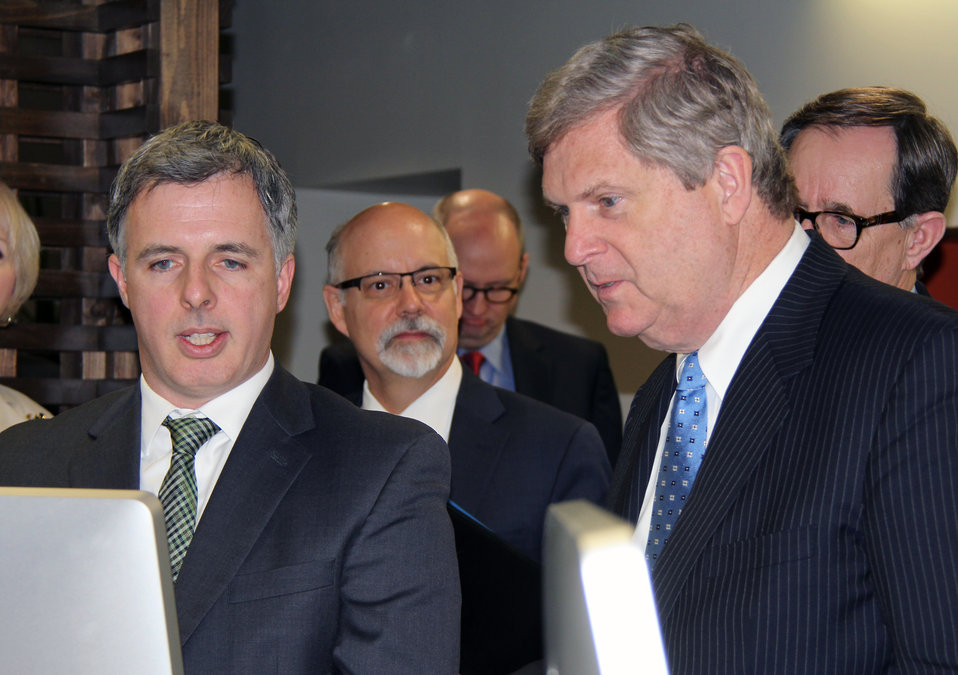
Agriculture Secretary Tom Vilsack receives a briefing on Economic Motivated Adulteration of Food at the National Center for Food Protection and Defense, University of Minnesota, St. Paul, MN on Apr. 18, 2014.